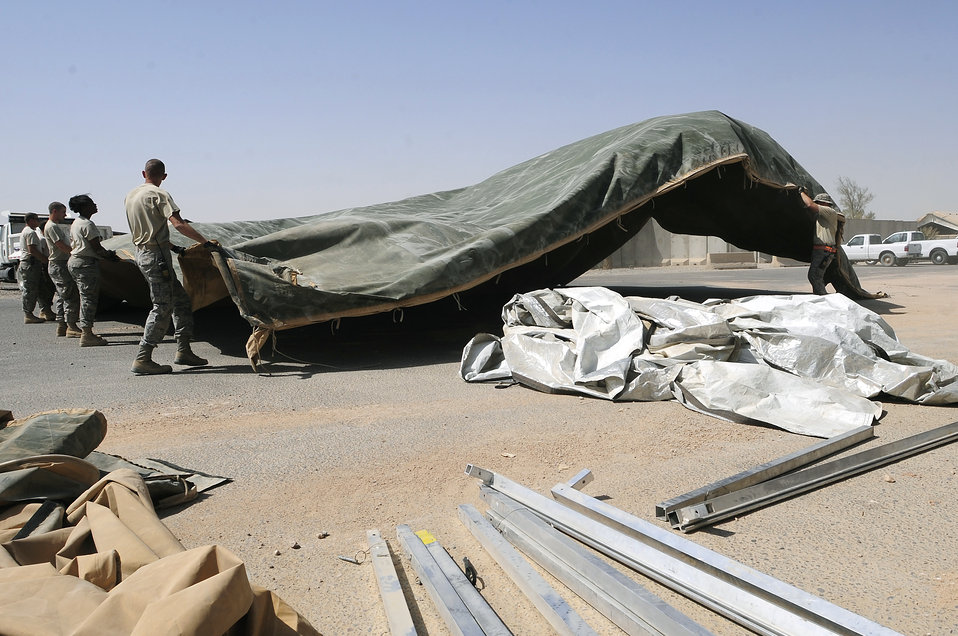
Reconstitution of materials supports fight, saves money

Members of the 407th Expeditionary Civil Engineer Squadron take down a tent structure Sept. 30, 2009, at Ali Base, Iraq. Squadron members are downsizing and consolidating material and equipment to send to U.S. warfighters in Afghanistan.